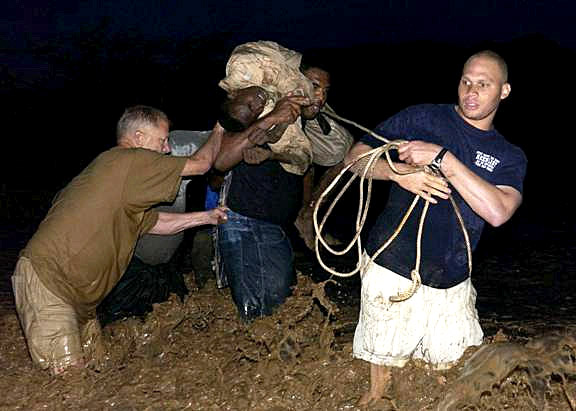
Veterinary mission morphs into lifesaving trek

Senior Airman Travis Manning carries an injured youth on his shoulders with the assistance of Army Col. Vic Adamson (left) and Army Sgt. Rovell Thomas (right). Airman Manning is part of Combined Joint Task Force--Horn of Africa Combat Camera. Colonel Adamson is assigned to the 350th Civil Affairs Command Functional Specialty. Sergeant Thomas is assigned to Delta Company 1st Battalion, 3rd U.S. Infantry Regiment. The Combined Joint Task Force - Horn of Africa team was assessing a river crossing site they planned to use the following day as part of a veterinary civic action program when they saw a young man in need of help.